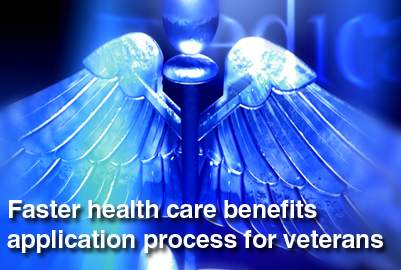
Veterans' health care benefits